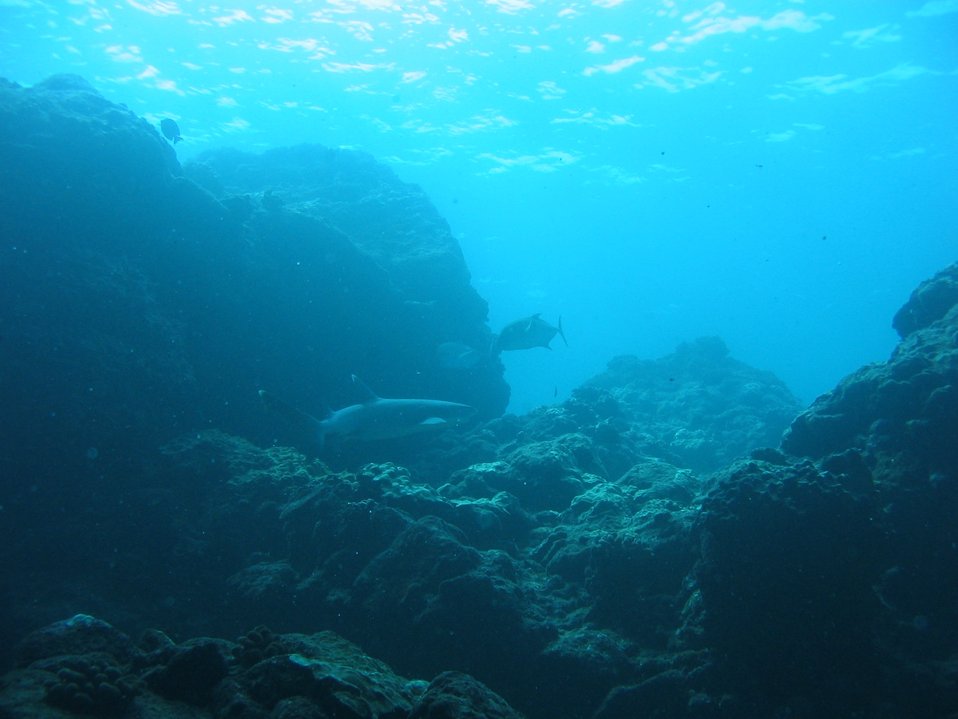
A white-tip shark (Triaenodon obesus). Hawaiian name is mano lalakea.